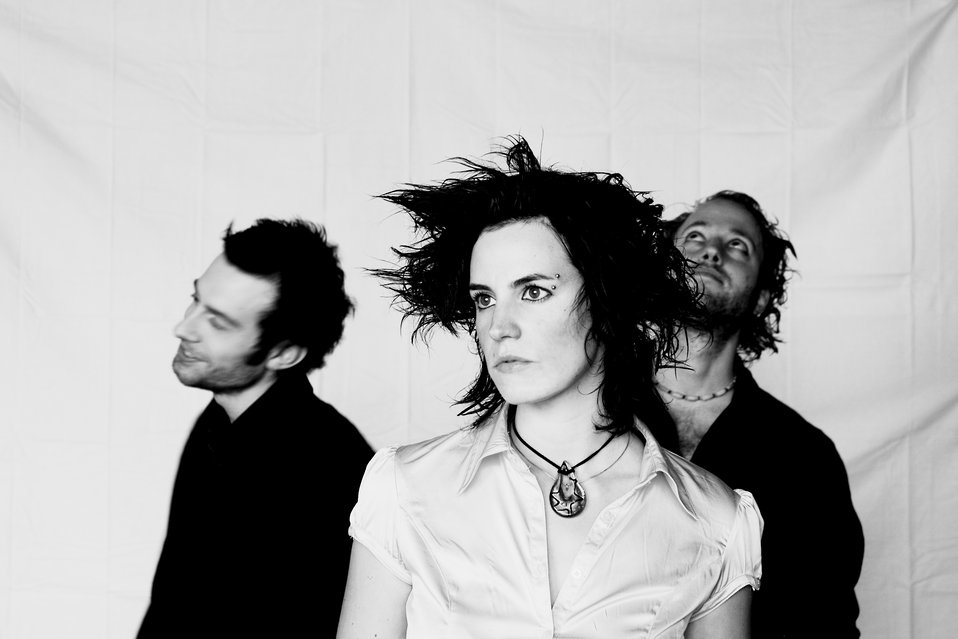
Furistic Jo Riot Woody Bekers Artur Pinto